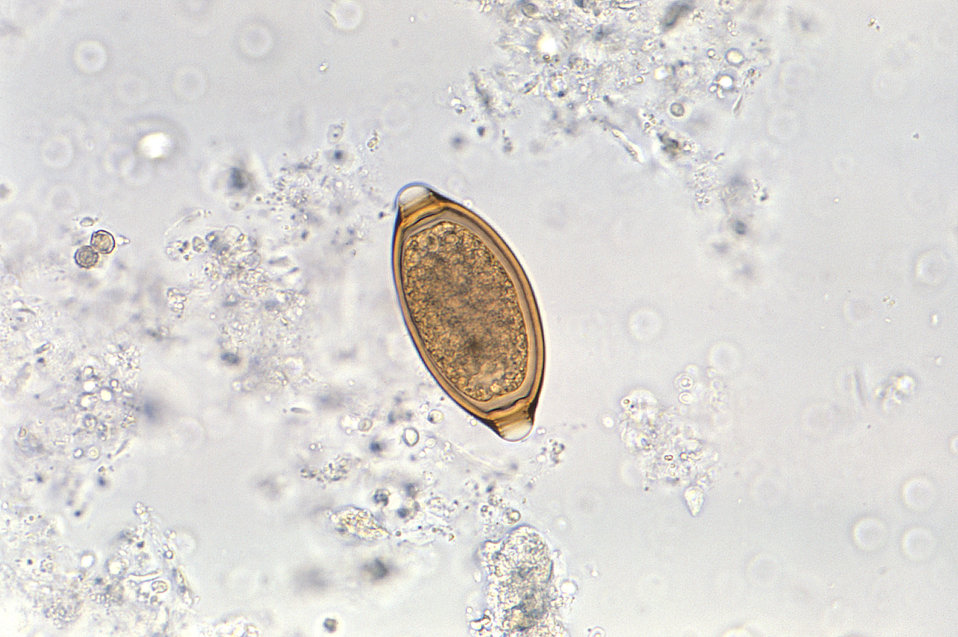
Under a relatively high magnification of 400X this photomicrograph revealed some of the ultrastructural morphology exhibited by a canine whipworm egg, Trichuris vulpis.